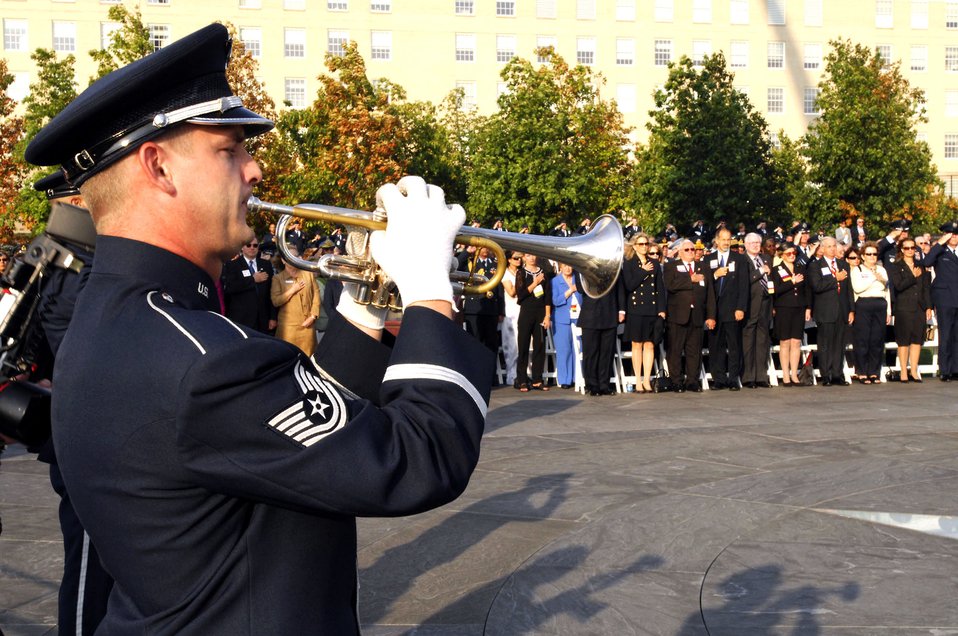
In remembrance

Tech. Sgt. Chris Wilson plays